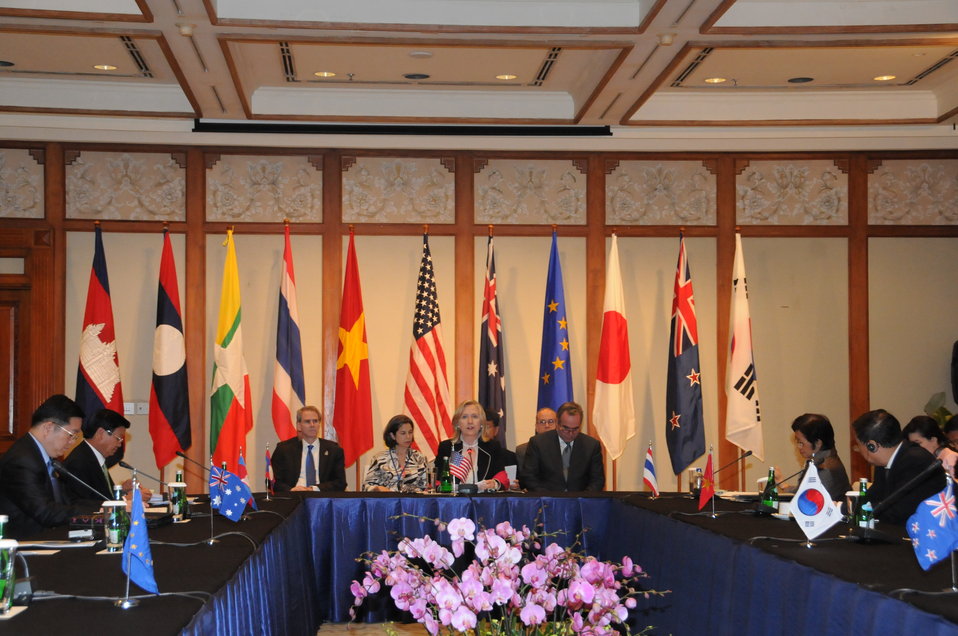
Secretary Clinton Participates in the U.S.-Lower Mekong Ministerial Meeting

U.S. Secretary of State Hillary Rodham Clinton participates in the U.S.-Lower Mekong Ministerial Meeting in Bali, Indonesia, on July 22, 2011. Also pictured are: Under Secretary of State for Global Affairs and Democracy Maria Otero, left of the Secretary; U.S Ambassador to ASEAN David Carden, left of Under Secretary Otero; and Assistant Secretary of State for East Asian and Pacific Affairs Kurt Campbell, right of the Secretary. Seated on the left panel, left to right, are: Cambodian Representative and Laos Foreign Minister Thongloun Sisoulith, and seated on the right panel, left to right, are: Thai Foreign Minister Chitriya Pinthong and Vietnam Foreign Minister Pham Gia Khiem.